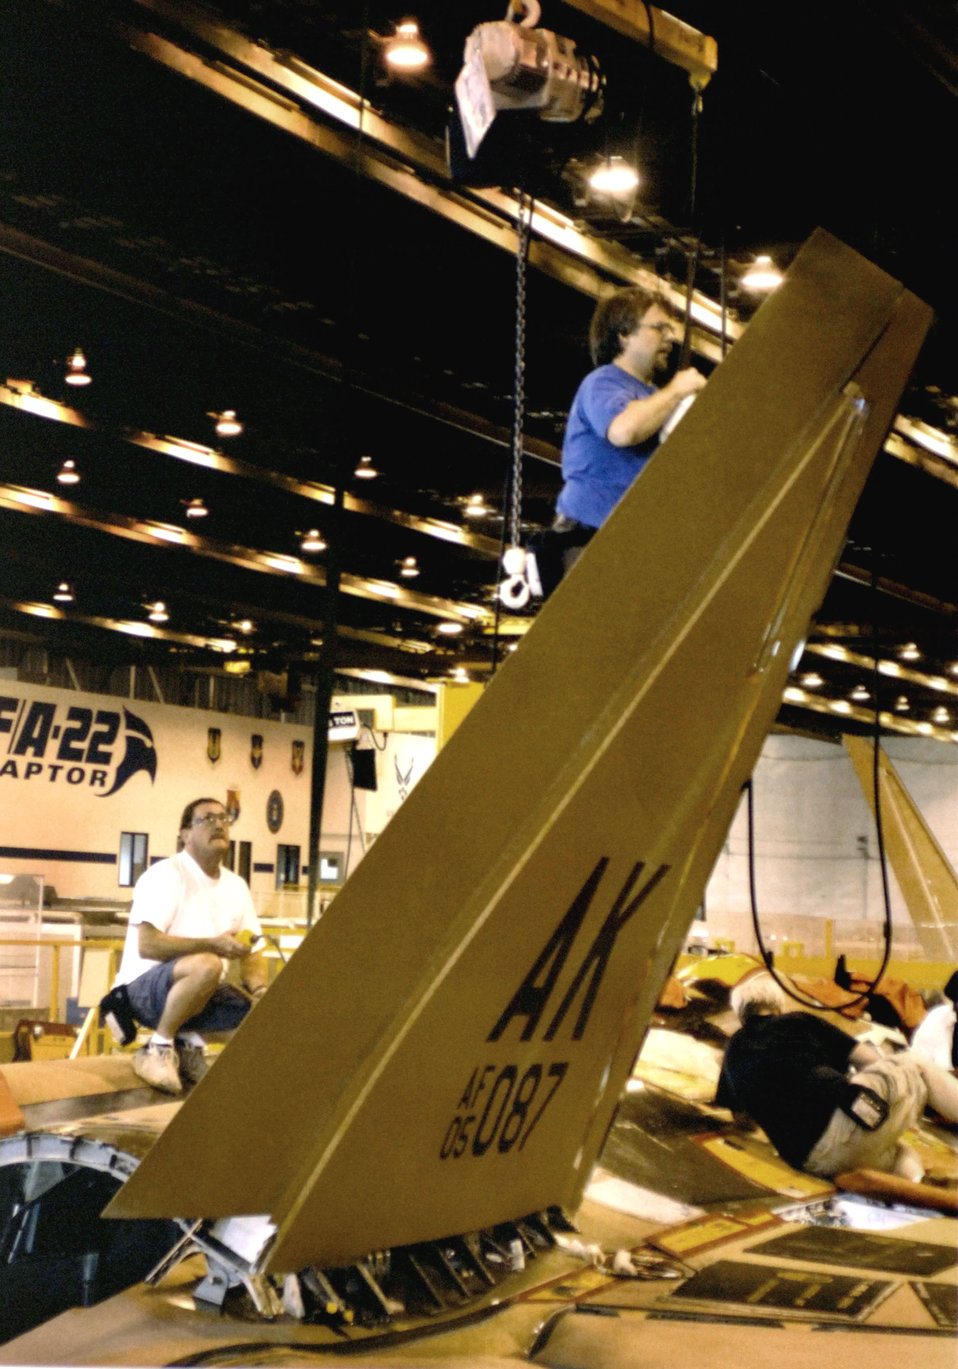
PACAF leaders see flash of future in Georgia

Employees at Lockheed Martin's F-22 Raptor production facility here attach a tail fin to the body of Raptor 4087. The aircraft, the first to bear the